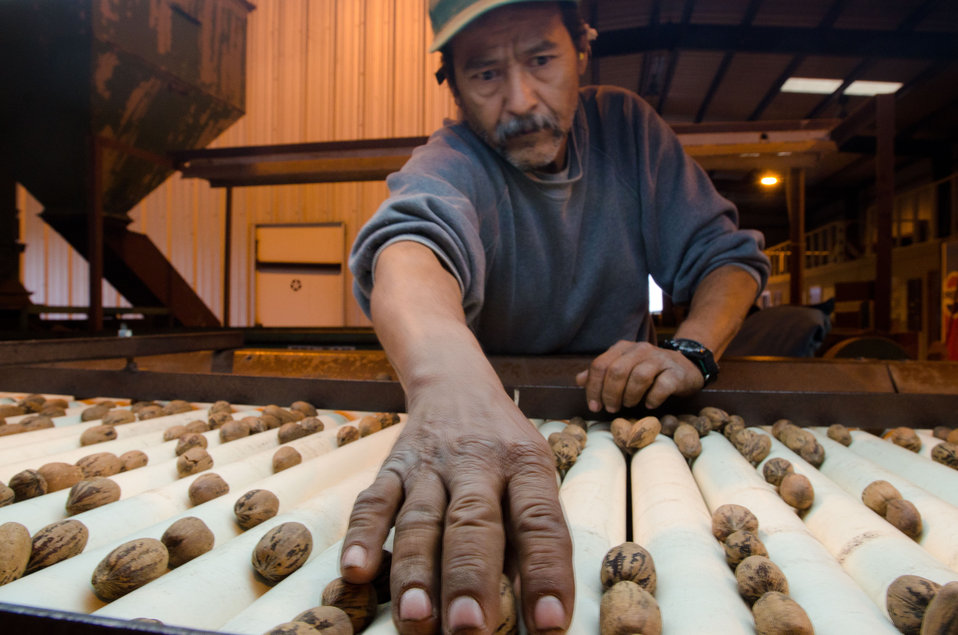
Jesus Gomez uses keen eyes and fast hands to sort out any pecans that are less than perfect from the last load of this season's harvest at Arrowhead Farms of Crystal City, TX, on Friday, December 9, 2011, owned by Mr. Akram Mohammad, a pecan farmer since 2005. The 719 acre farm with 10,000 trees, features some orchards with underground micro irrigation system that feeds water to the roots of 4,380 pecan trees on 146 acres. Mr. Mohammad said, “USDA (U.S. Department of Agriculture) was essential to my business and trees surviving the recent exceptional drought. The trees were stress free thanks to underground micro-irrigation. This is essential to the future growth of Texas agriculture and good for America.” U.S. Department of Agriculture’s (USDA) Environmental Quality Initiative Program (EQIP) awarded Mr. Mohammad a $130,000 grant in 2008. He provided $26,000 for the balance of the $156,000 total cost to install a 146-acre underground micro-irrigation for 4,380 trees.